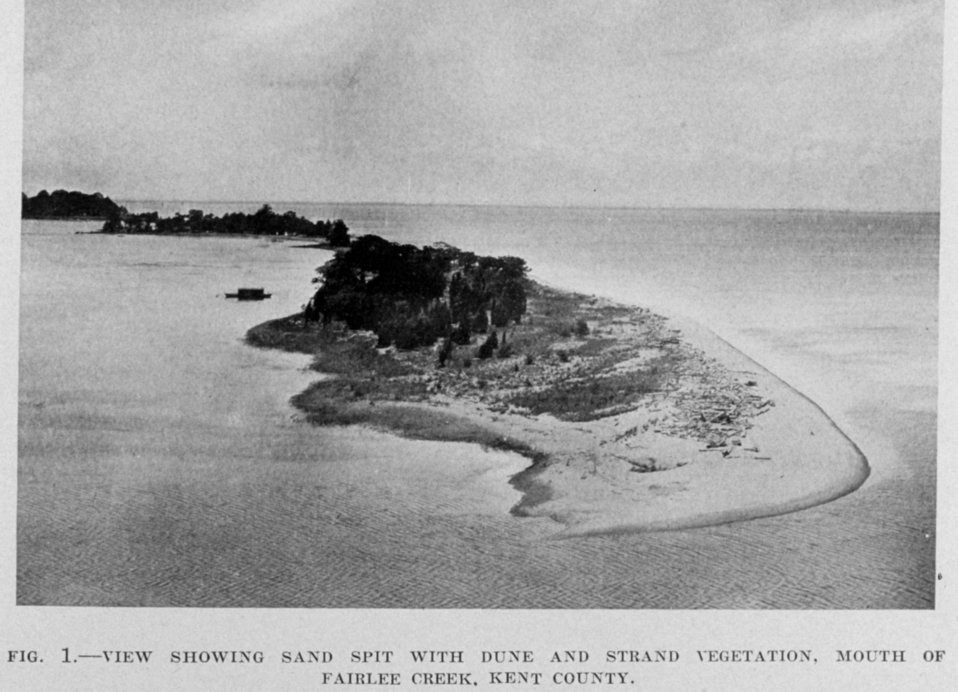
Sand spit with dune and strand vegetation, mouth of Fairlee Creek, Kent County.